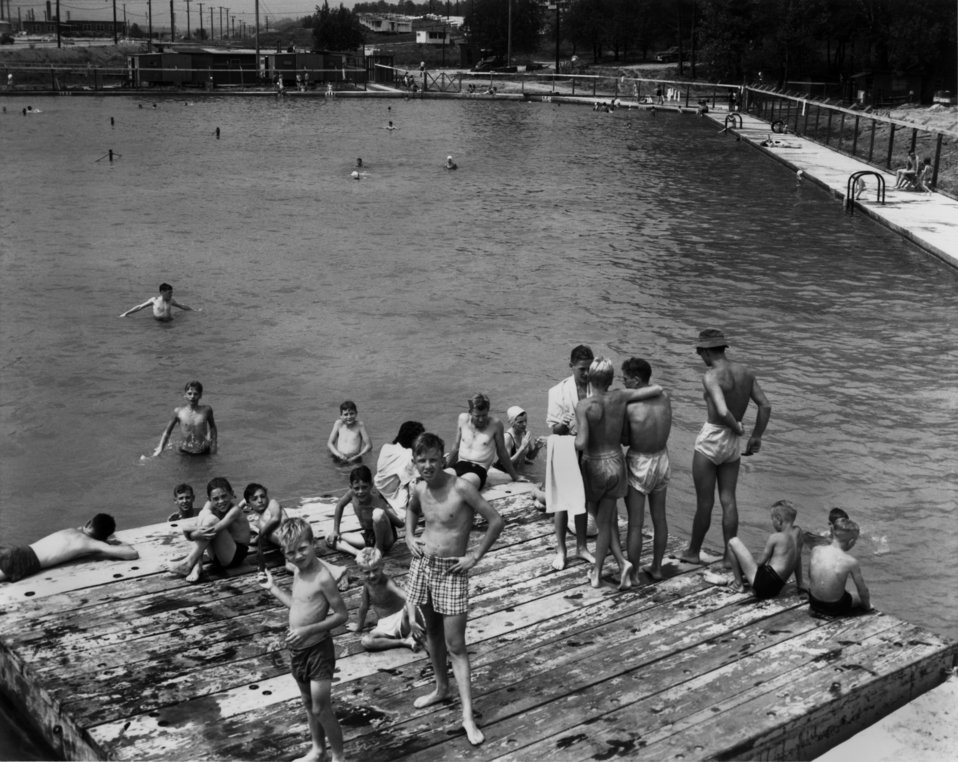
Swimming Pool Oak Ridge

PRO928-2 DOE photo by Ed Westcott

Swimming Pool Oak Ridge Tennessee 8/1945